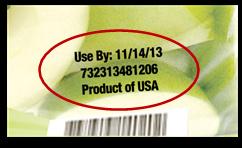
RECALLED – Apple slices

November 14, 2013 – Product Recall – Crunch Pak Issues Voluntary Recall of Limited Quantities of Crunch Pak Brand Apple Slices Because of Possible Health Risk.